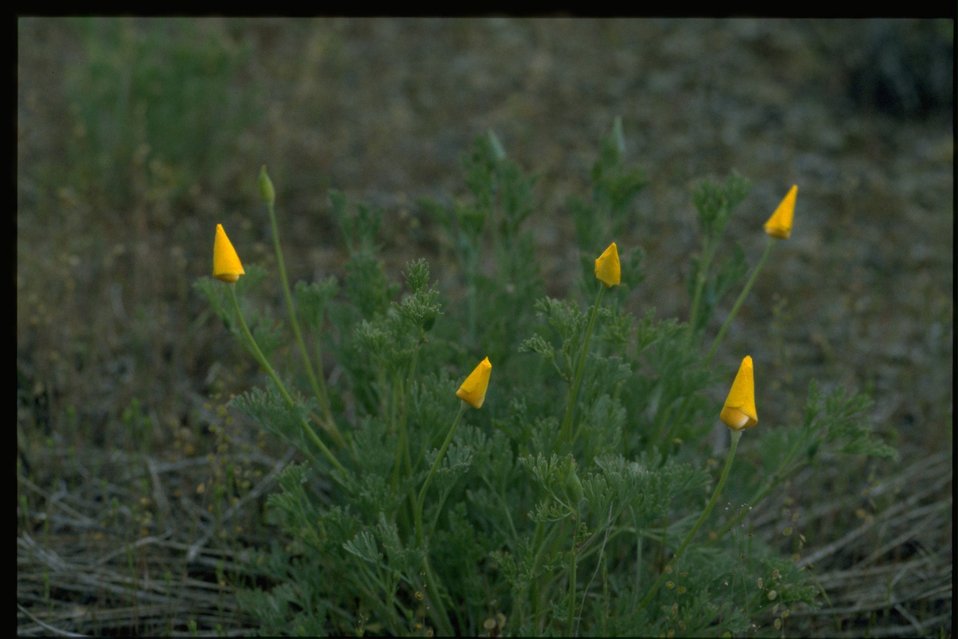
Farshot of Eschscholzia californica.